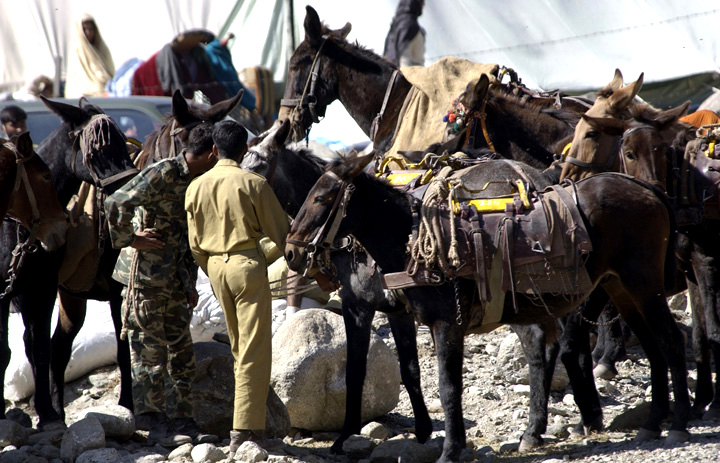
Mule train

BALAKOT, Pakistan -- Pakistani Soldiers are using mules to get much needed relief supplies to earthquake victims in remote mountainous areas of this country. This team left Oct. 20 after U.S. military helicopters flew relief supplies here. The Oct. 8 earthquake devastated parts of Pakistan, India and Kashmir. The U.S. military is playing a key role in transporting relief supplies into the country, and then using helicopters to get it to remote areas.